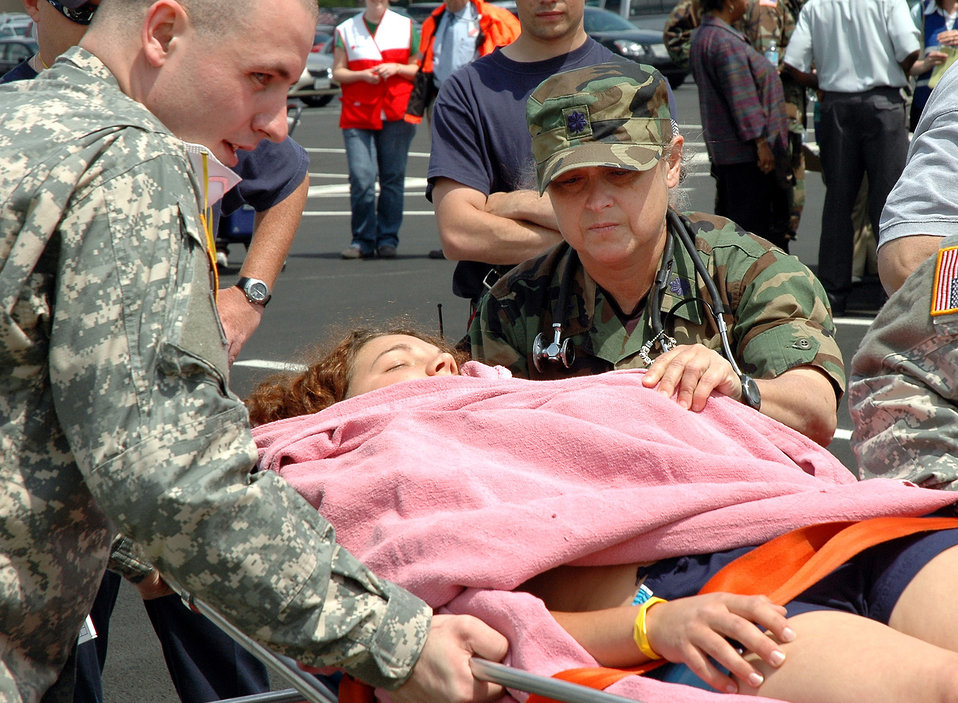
National Capitol Region first responders train for Pentagon disaster

Lt. Col. (Dr.) Marilyn D. Perry checks on a